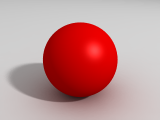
van engelse wikipedia, met tekst: 'Radiosity rendering example. Created in POV-Ray and edited in the GIMP. Made by Wapcaplet and released into the public domain.'
Public domain Public domain false false This work has been released into the public domain by its author, :en:User:Wapcaplet. This applies worldwide.
In some countries this may not be legally possible; if so:
en:User:Wapcaplet grants anyone the right to use this work for any purpose, without any conditions, unless such conditions are required by law. Public domain Public domain false false